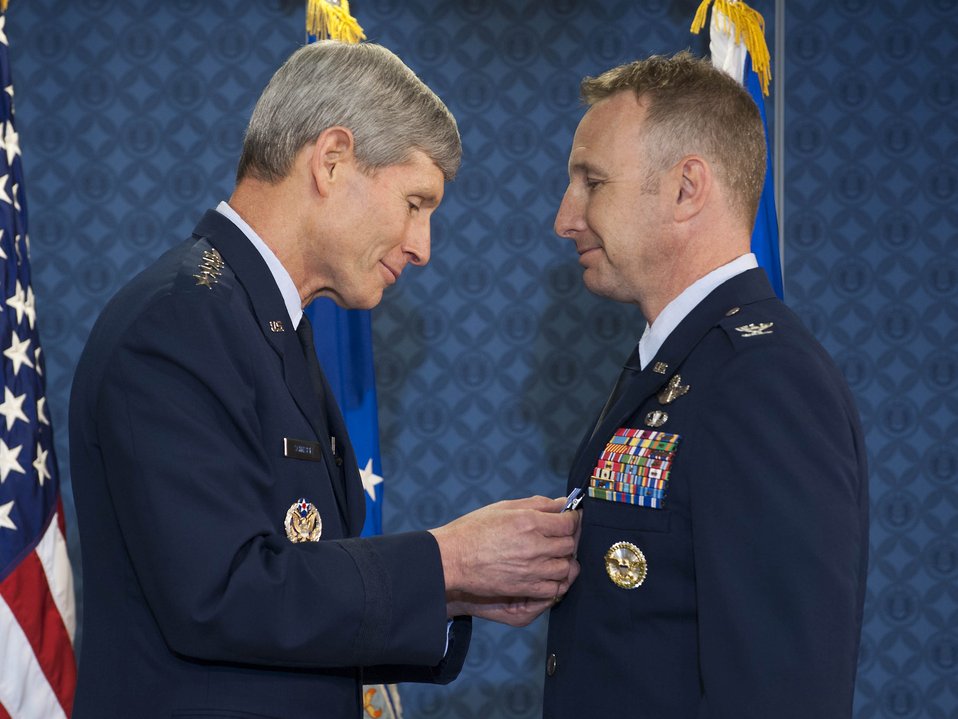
CSAF presents Distinguished Flying Cross

Air Force Chief of Staff Gen. Norton Schwartz (left) presents the first of two Distinguished Flying Cross with Valor medals to Col. Christopher Barnett during a ceremony in the Pentagon on May 18, 2012. Barnett also received the Bronze Star during the ceremony.